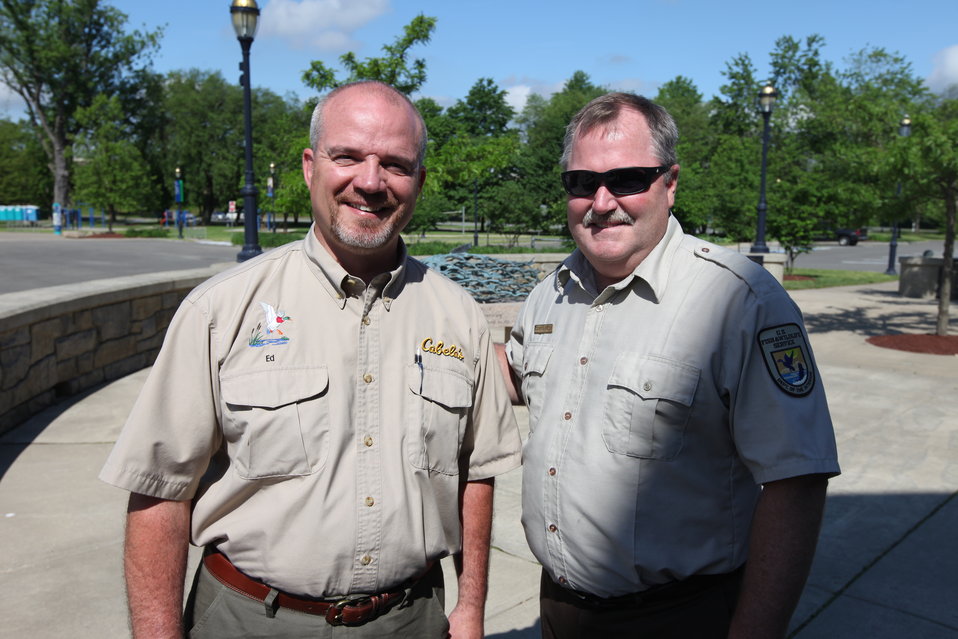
Andy French & Ed from Cabela's

Silvio O. Conte National Fish & Wildlife Refuge Manager Andy French and Ed Bartolotta Cabela's outfitters in East Hartford.